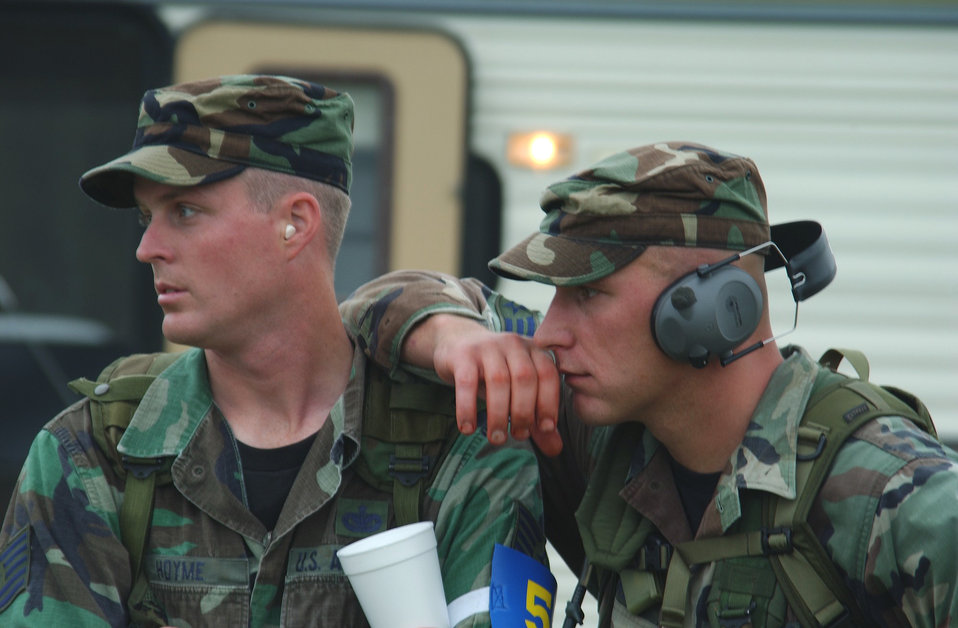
Defender Challenge '03

CAMP BULLIS, Texas -- Tech. Sgt. Daniel Hoyme (left) and Senior Airman Brian Patterson of the Air Education and Training Command Defender Challenge 2003 team, watch a team member compete on the handgun range during the Warrior Challenge event. The AETC team won the Warrior Challenge. Hoyme is from the 342nd Training Squadron at Lackland Air Force Base, Texas, and Patterson is from the 81st Security Forces Squadron at Keesler AFB, Miss.